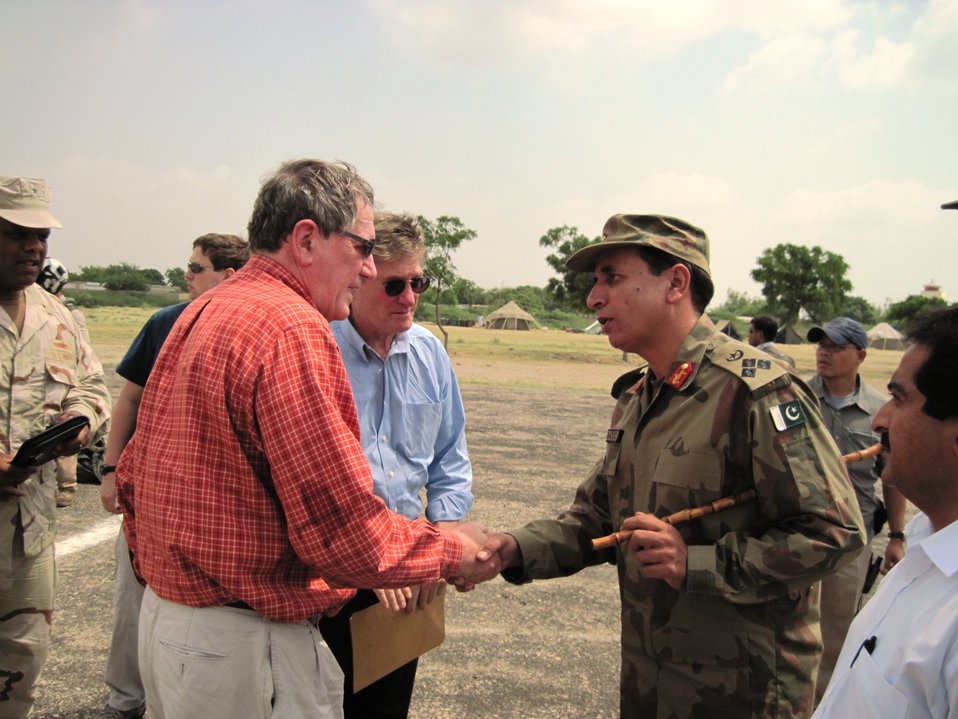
Special Representative Holbrooke Meets Pakistani Army Brigadier Mehmood and Karachi's Consul General Martin

U.S. Special Representative to Afghanistan and Pakistan Richard C. Holbrooke meets Pakistani Army Brigadier Mehmood accompanied by Karachi’s Consul General William Martin, while visiting the Makli Cricket Stadium Army IDP Camp in Thatta, Pakistan.